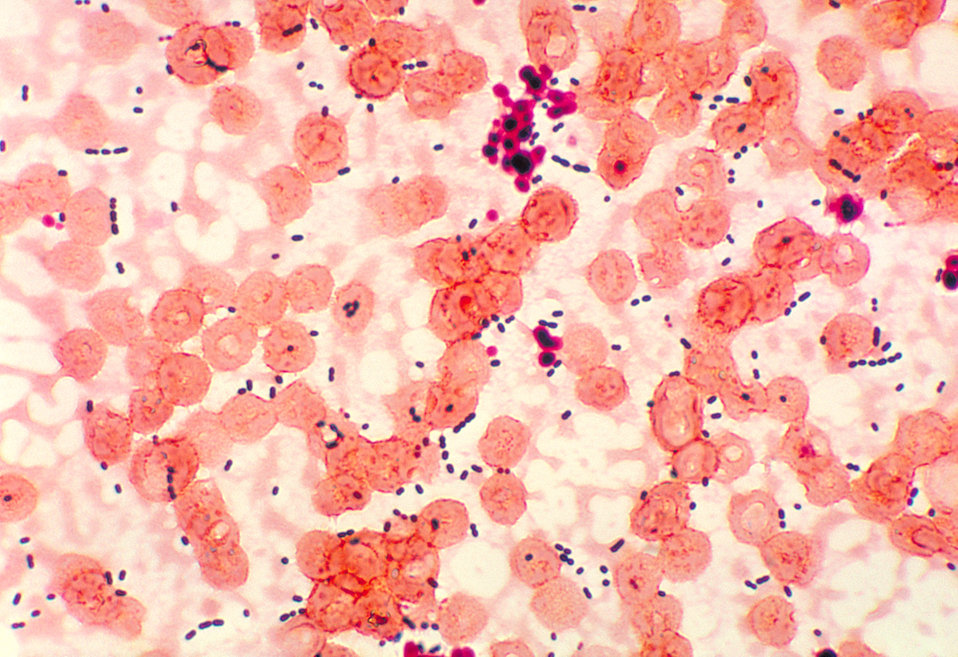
This photomicrograph reveals cocci-shaped Enterococcus sp. bacteria taken from a pneumonia patient.